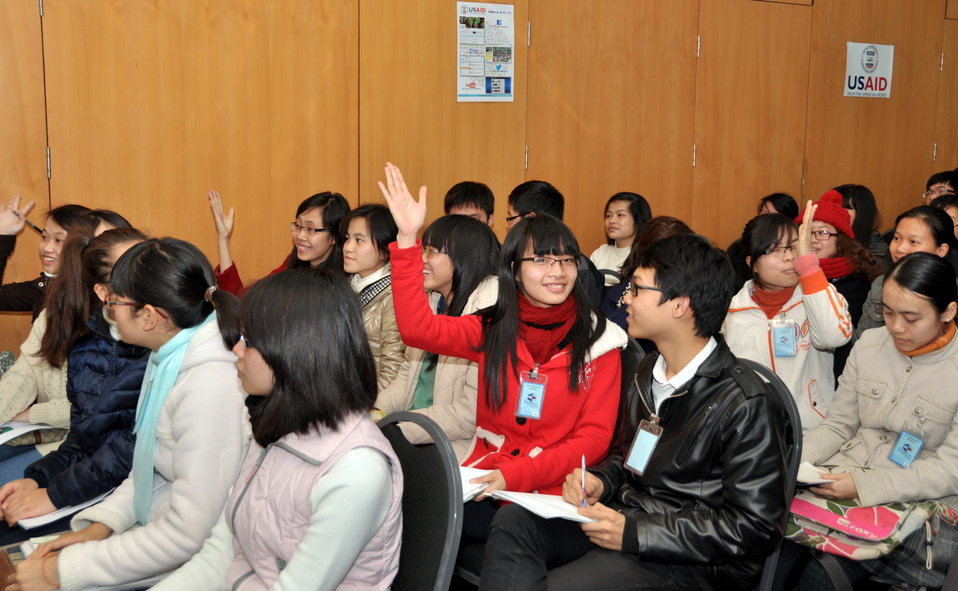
Speaker program on Climate Change and Clean Energy at the American Center

Hanoi, January 16, 2013